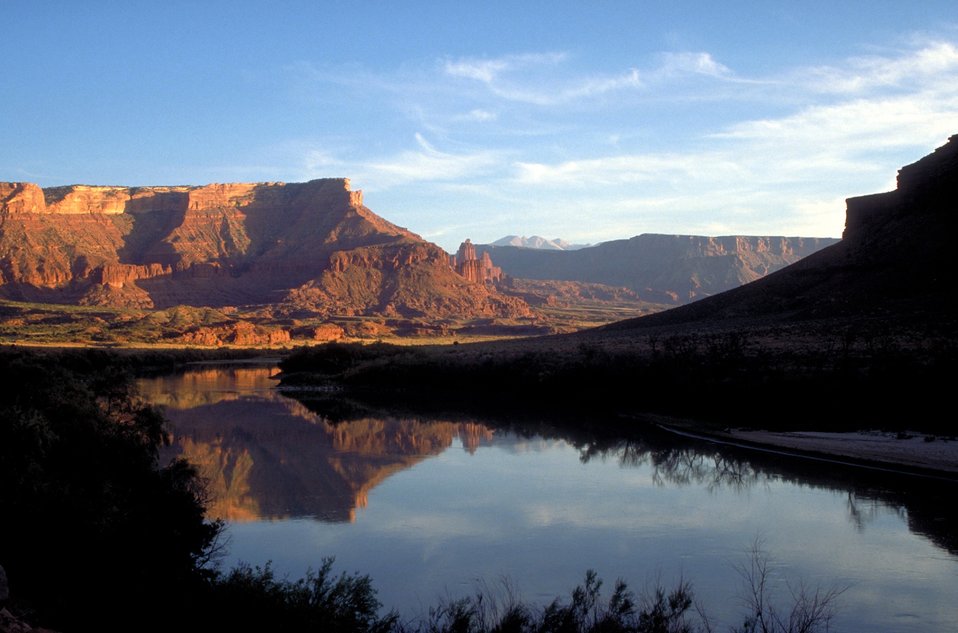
Fisher Towers along Highway 128, near Moab, Utah.